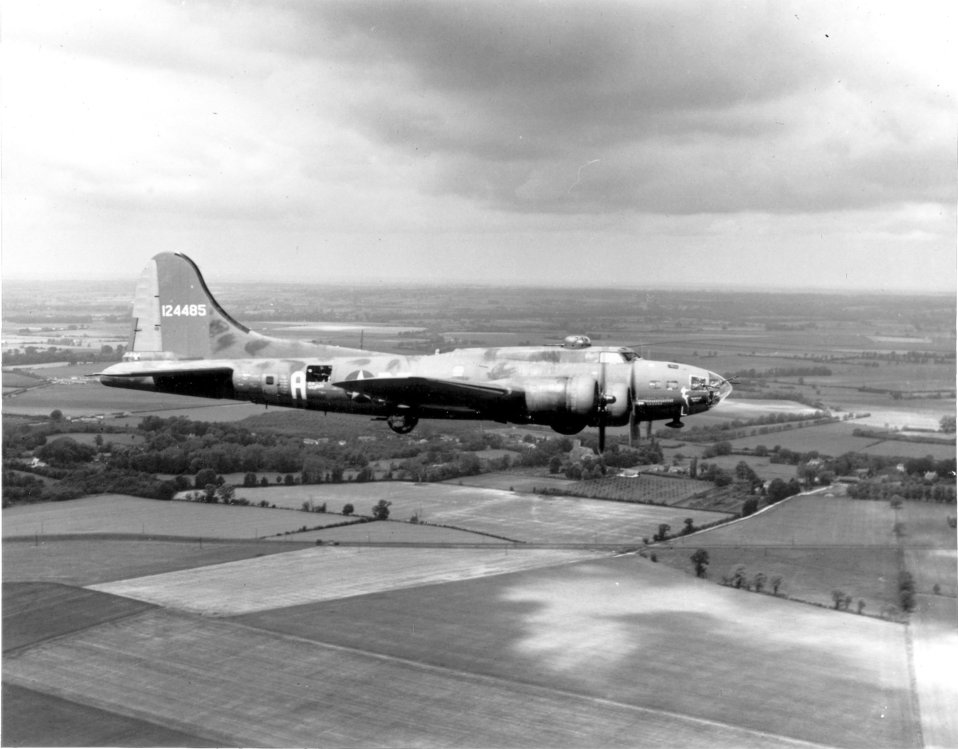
Memphis Belle

1940's -- The B-17 Flying Fortress